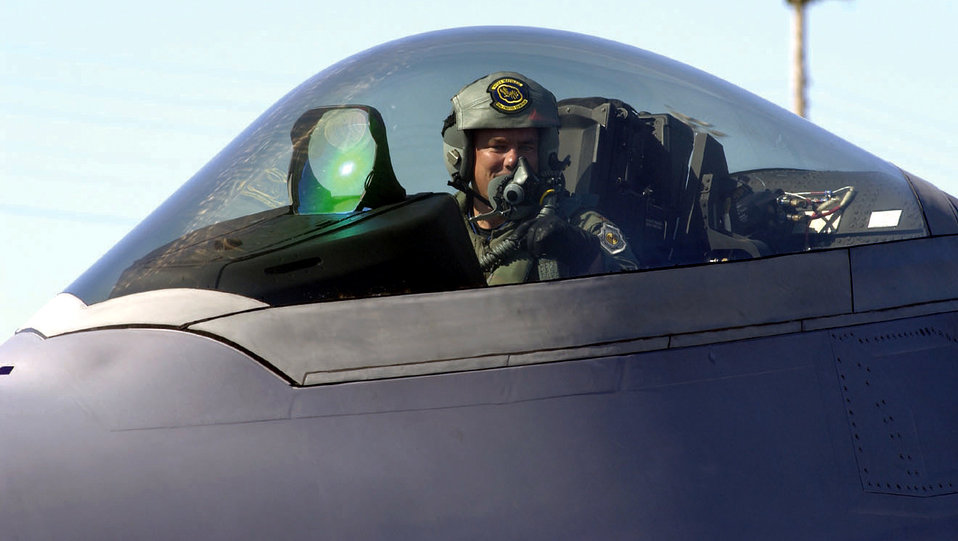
Raptor ready

TYNDALL AIR FORCE BASE, Fla. - Maj. Michael Hoepfner completes his checkout flight in Raptor No. 18 recently as the first local F/A-22 fighter pilot to finish his training here.